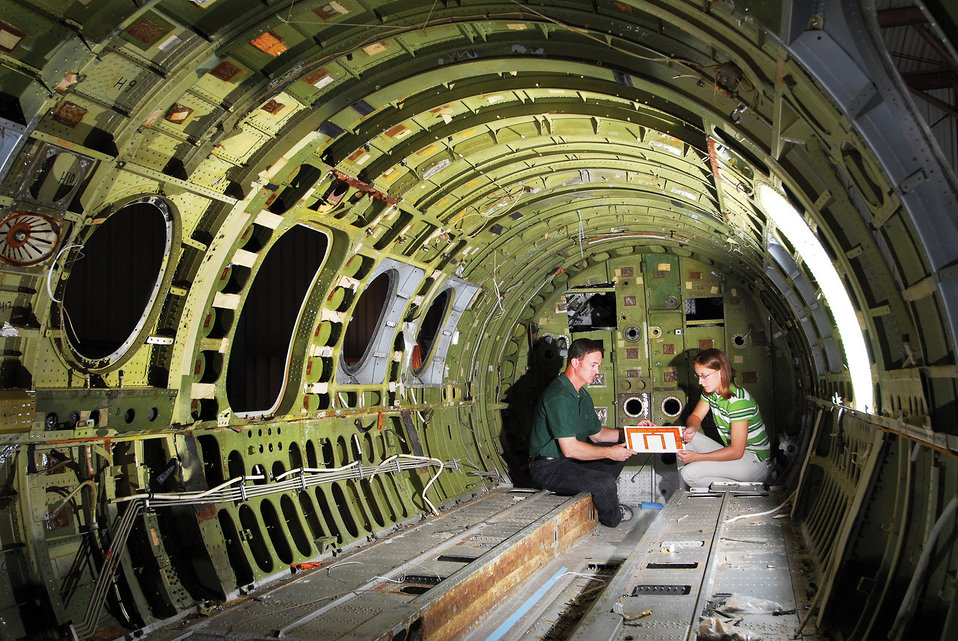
In a retired jet at Sandia, Dennis Roach and Ciji Nelson prepare Structure Health Monitoring (SHM) Sensors.

The Comparative Vacuum Monitoring sensor is a self-adhesive rubber patch, ranging from dime-to credit-card- sized. The rubber's underside is laser-etched with rows of tiny, interconnected channels or galleries to which an air pressure is applied. Any propagating crack in the materials under the sensor breaches the galleries and the resulting change in pressure is monitored. The sensors are made by Structure Monitoring Systems, Inc. (SMS) of Australia, are inexpensive, reliable, durable, and easy to apply. They provide equal or better sensitivity than is achievable with conventional inspection methods. Besides aircraft, SHM techniques could monitor the structural well-being of spacecraft, weapons, rail cars, bridges, oil recovery equipment, buildings, armored vehicles, ships, wind turbines, nuclear power plants, and fuel tanks in hydrogen vehicles.